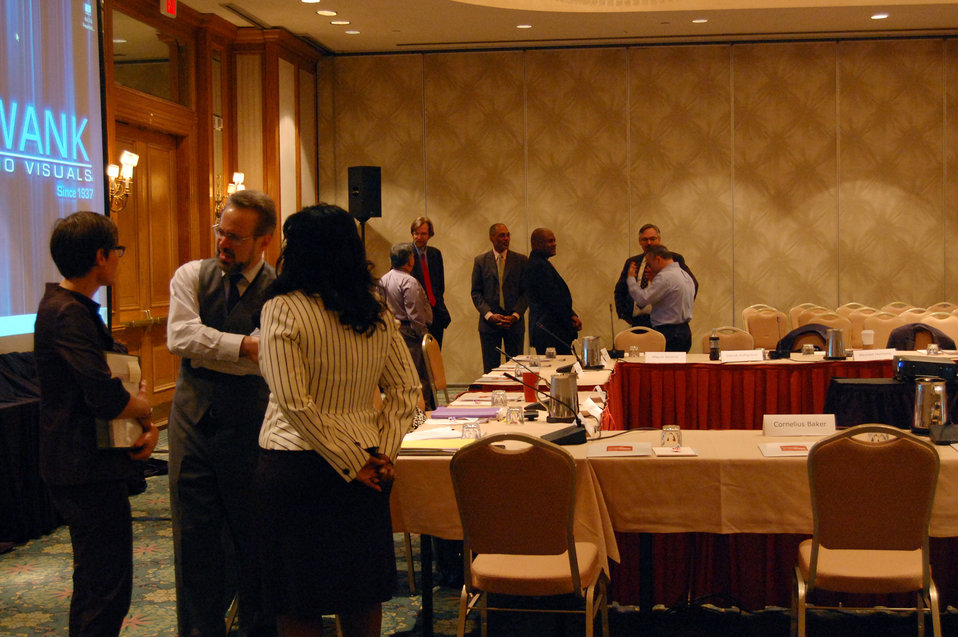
PACHA conf012